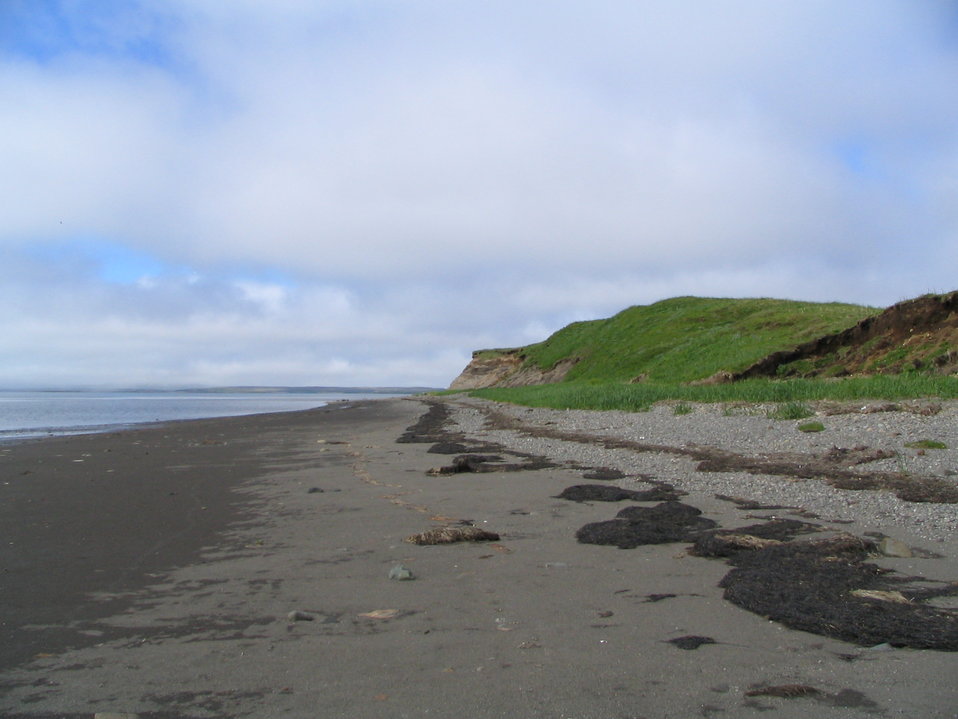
Kinzarof Lagoon beach

Kinzarof Lagoon, Izembek National Wildlife Refuge